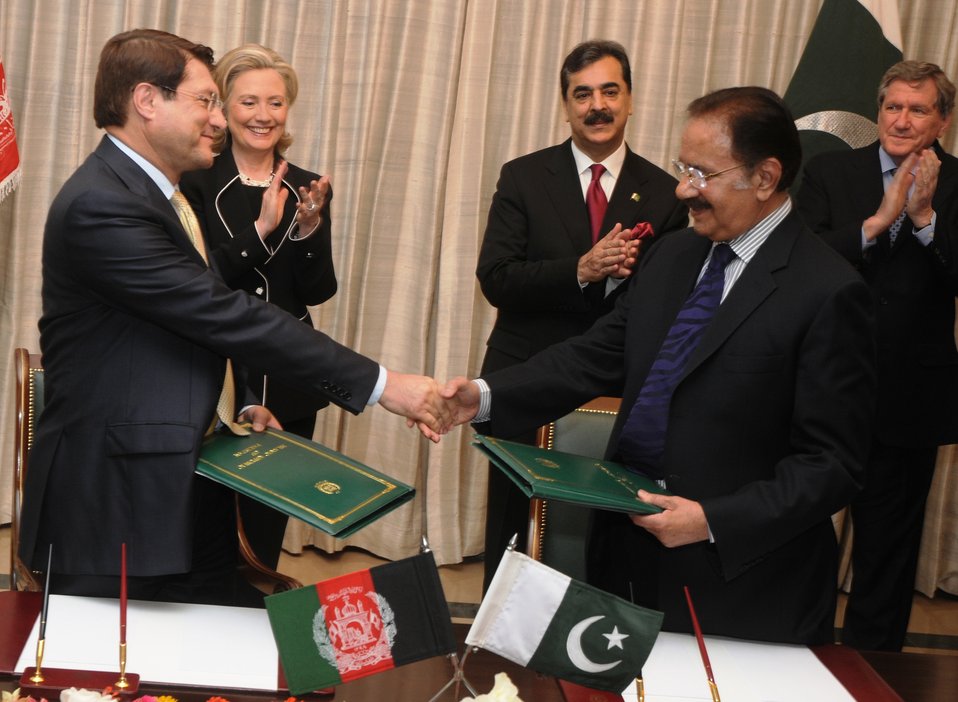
Secretary Clinton, Pakistani Prime Minister Yousaf Raza Gilani, and Special Representative Holbrooke Watch Pakistani Federal Minister for Commerce Makhdoom Amin Faheem and Afghan Minister for Trade and Industries Dr. Anwarul Haq Shake Hands

U.S. Secretary of State Hillary Rodham Clinton, Pakistani Prime Minister Yousaf Raza Gilani, and Special Representative for Afghanistan and Pakistan Richard C. Holbrooke look on as Pakistani Federal Minister for Commerce Makhdoom Amin Faheem and Afghan Minister for Trade and Industries Dr. Anwarul Haq shake hands after signing a Pakistan-Afghanistan transit trade agreement at the Prime Minister’s House in Islamabad, Pakistan, on July 18, 2010.